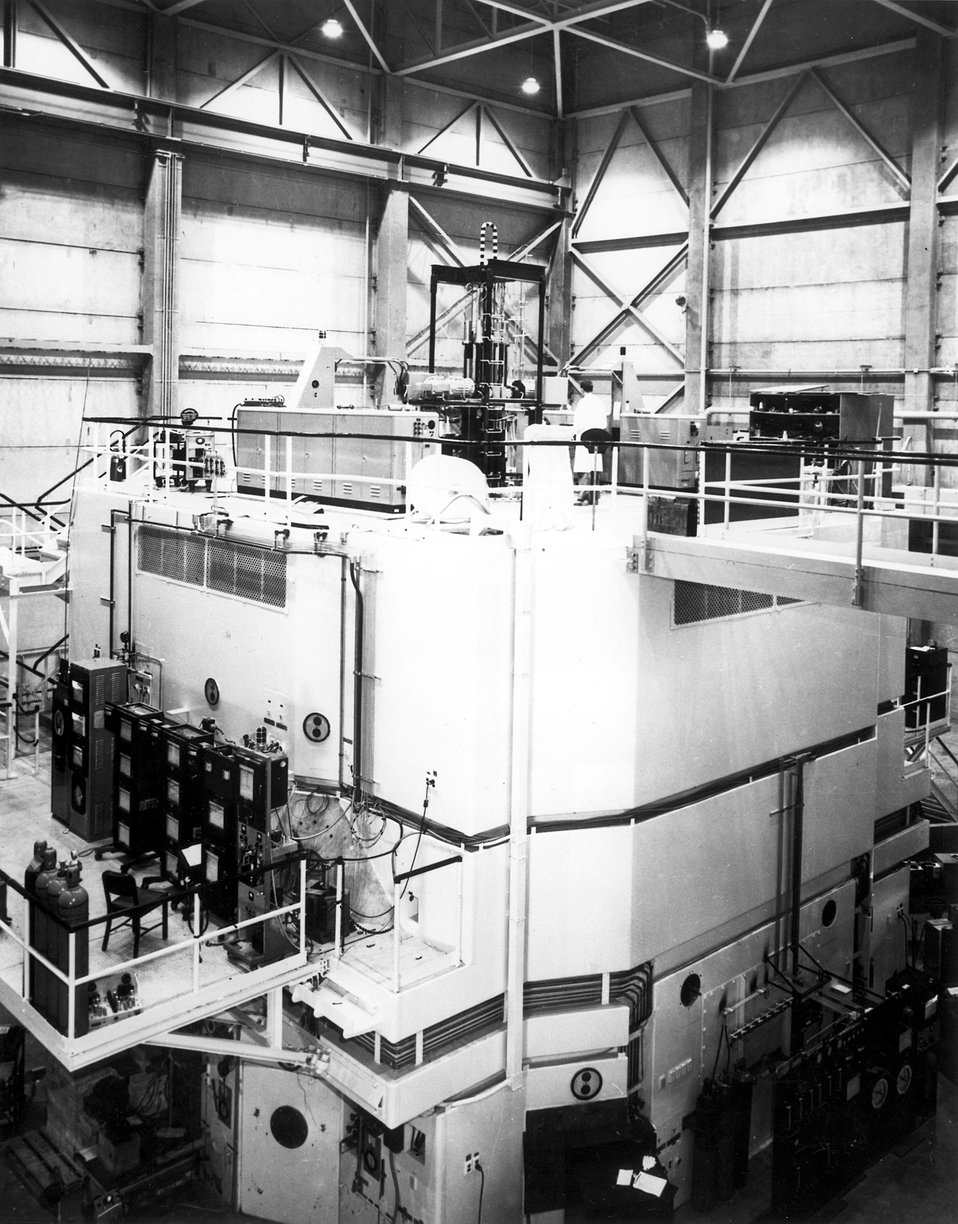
North and west faces of the Materials Testing Reactor showing bridge leading from reactor top to control room. Experimental equipment is seen on the balcony on the north face. Circa 1954.